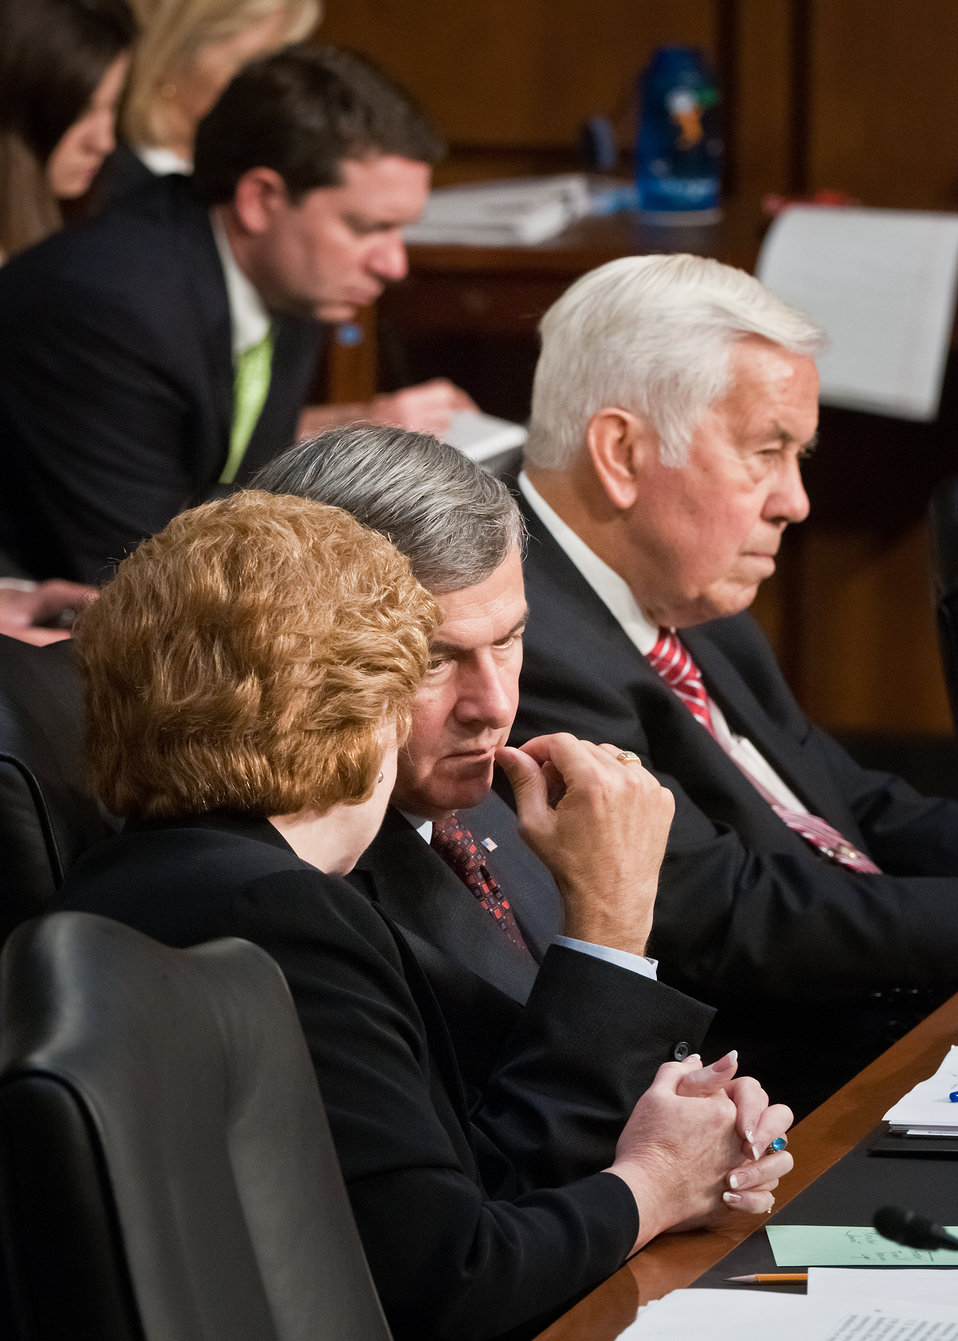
Senator Debbie Stabenow, MI, Chairwoman of the U.S. Senate Committee on Agriculture, Nutrition and Forestry and Senator and former Agriculture Secretary Mike Johanns, NE, discuss the proceedings during a hearing on the next Farm Bill with Agriculture Secretary Tom Vilsack in Washington, DC, Thursday, May 26, 2011. Next to Senator Johanns is former Chairman Senator Richard Lugar, IN.